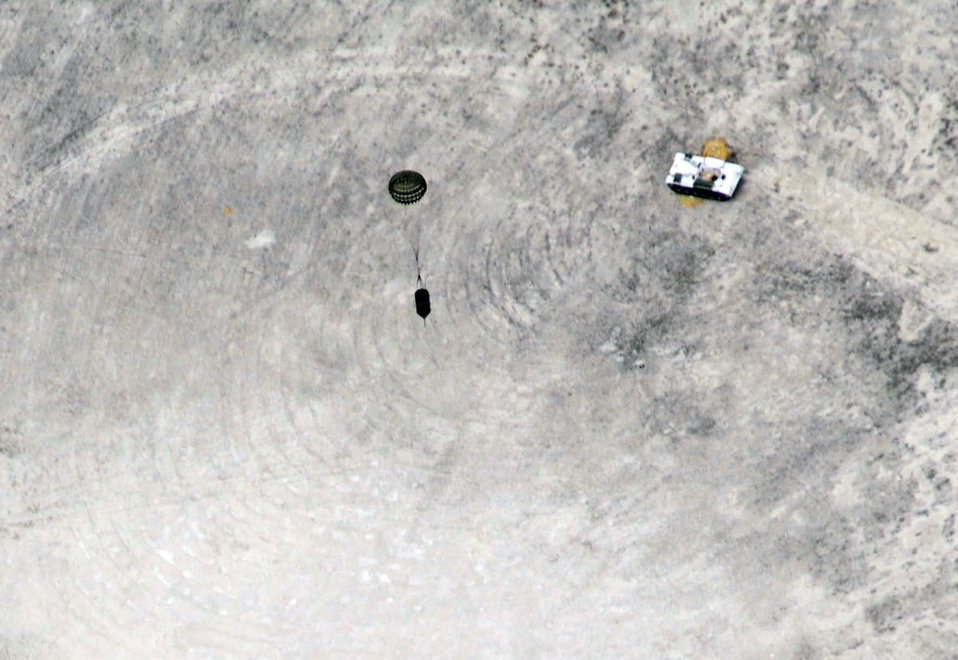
Duke Field Airmen drop 15,000-pound bomb

The last operational 15,000-pound Bomb Live Unit-82 floats toward its target July 15 at the Utah Test and Training Range.